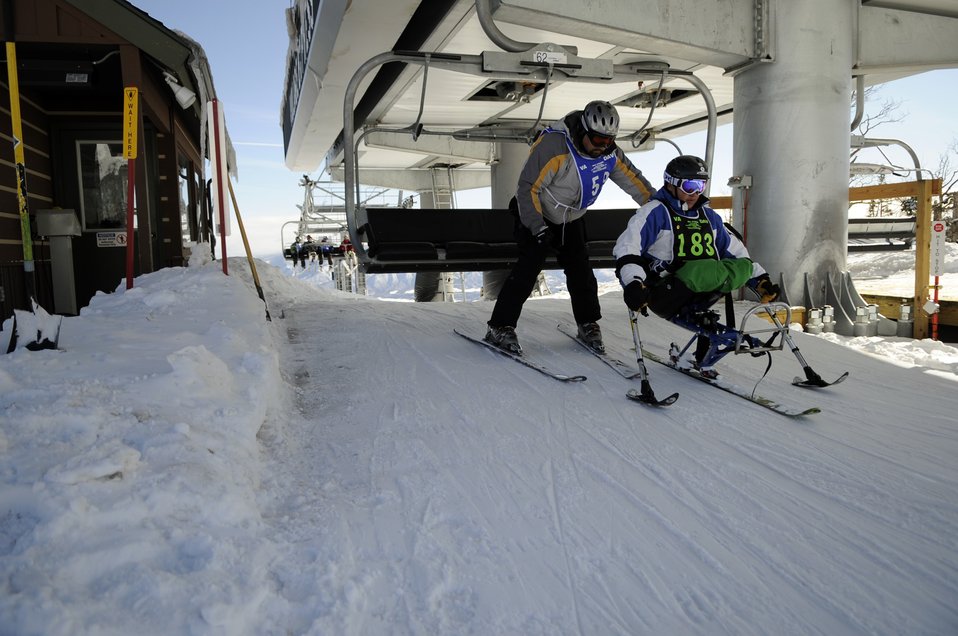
23rd National Disabled American Veterans Winter Sports Clinic

Mark Finken assists Senior Airman Kevin Krogh off the ski lift on top of Sam's Knob Apr. 2 during the 23rd National Disabled American Veterans Winter Sports Clinic in Snowmass Village, Colo. Airman Krogh lost both legs in a major car accident in 2007 and this is his first year attending the sports clinic. Airman Krogh is assigned to Fort Sam Houston in San Antonio. Finken is a ski instructor for the sports clinic.